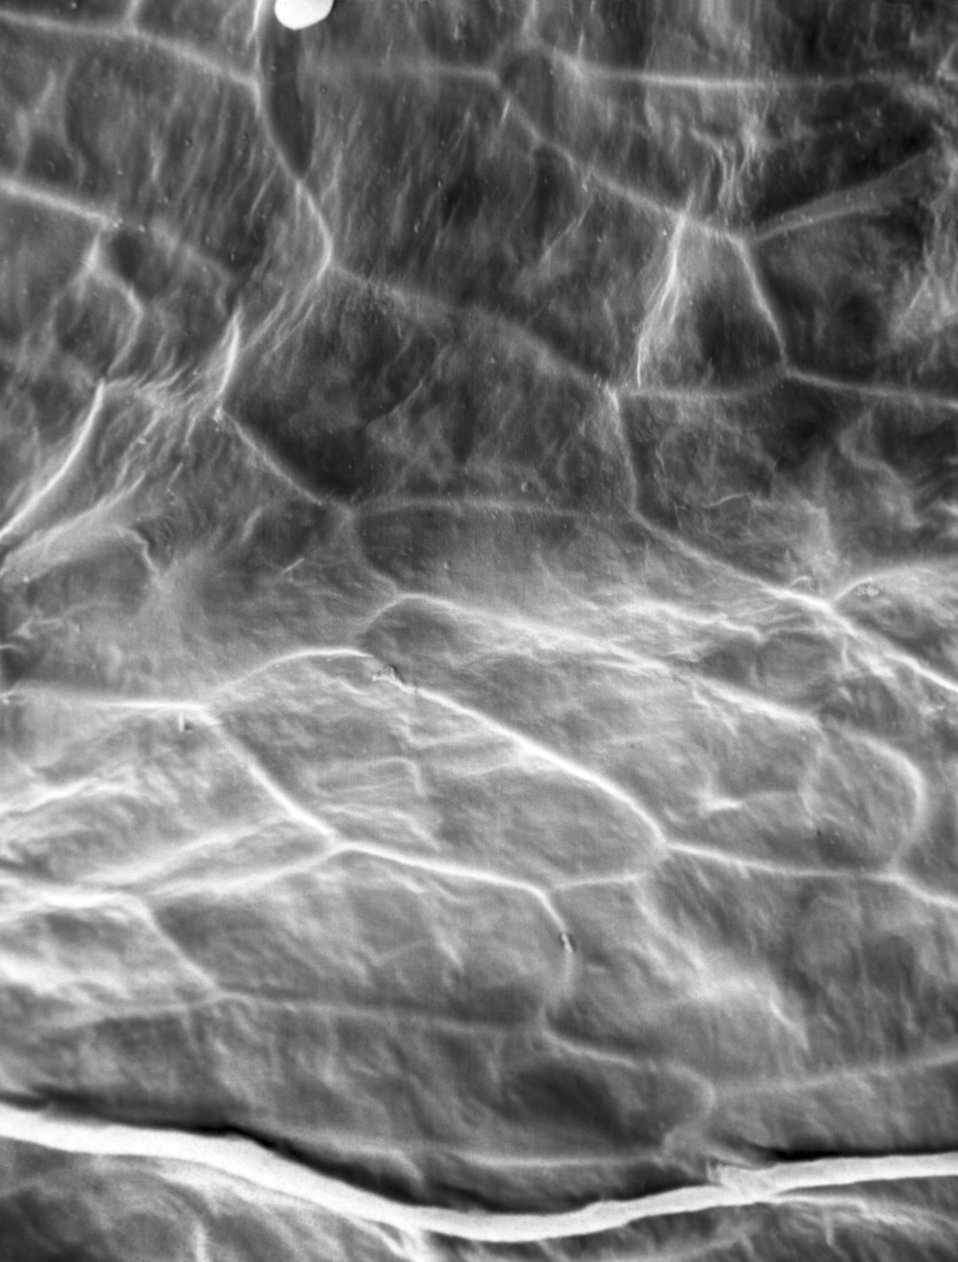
This electron micrograph reveals the textured surface of a blackberry, Rubus villosus.